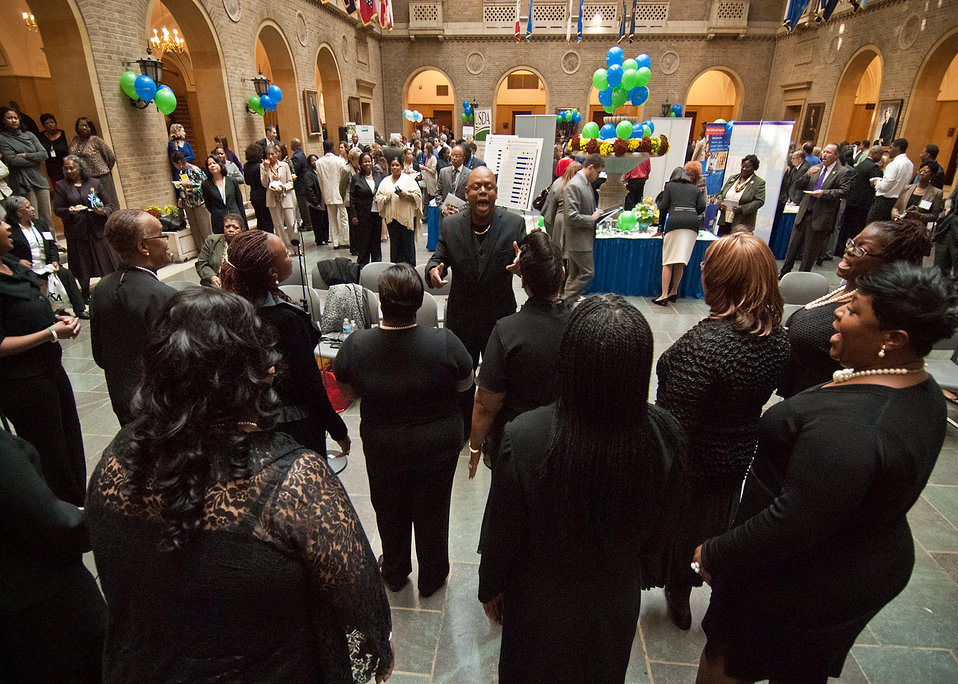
Arthur Bruce, Agricultural Marketing Service leads the Blacks in Government (BIG) Choir during the Cultural Transformation Recognition Ceremony on the patio of the Jamie Whitten, US Department of Agriculture in Washington, DC, on Tuesday, October 4, 2011. Cultural Transformation is the process of creating a workplace where all employees and customers are treated with dignity, respect and the opportunity for success. Recognizing the important contributions of all employees to the operation of the United States Department of Agriculture. The goal of cultural transformation is to get everyone at USDA – from the Under Secretaries to employees at every grade level, in every location - to ensure USDA is a place where there’s opportunity for all to reach their full potential. Only then can USDA provide its customers with exceptional service in an equitable manner.